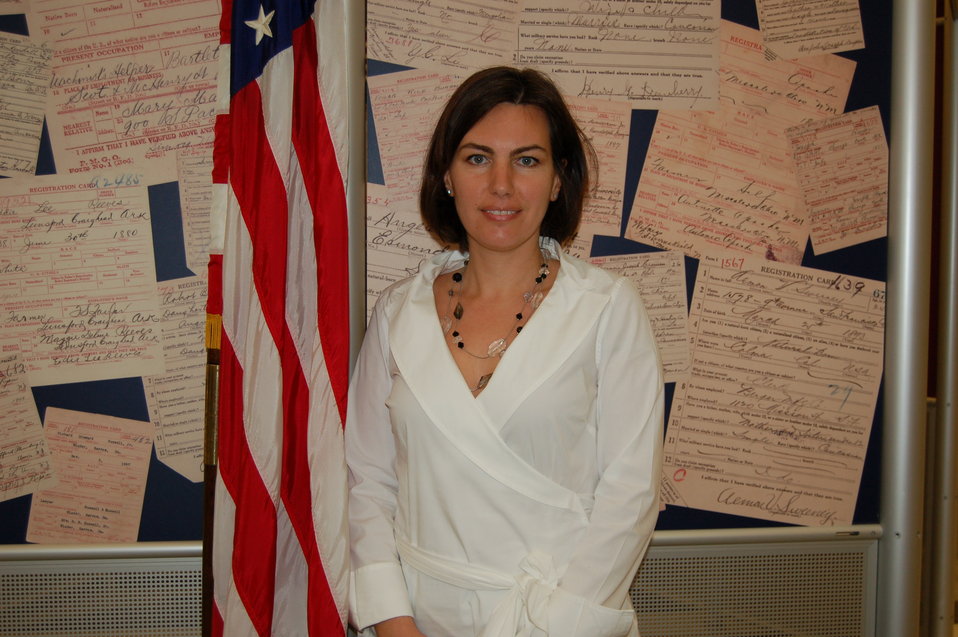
New Citizens